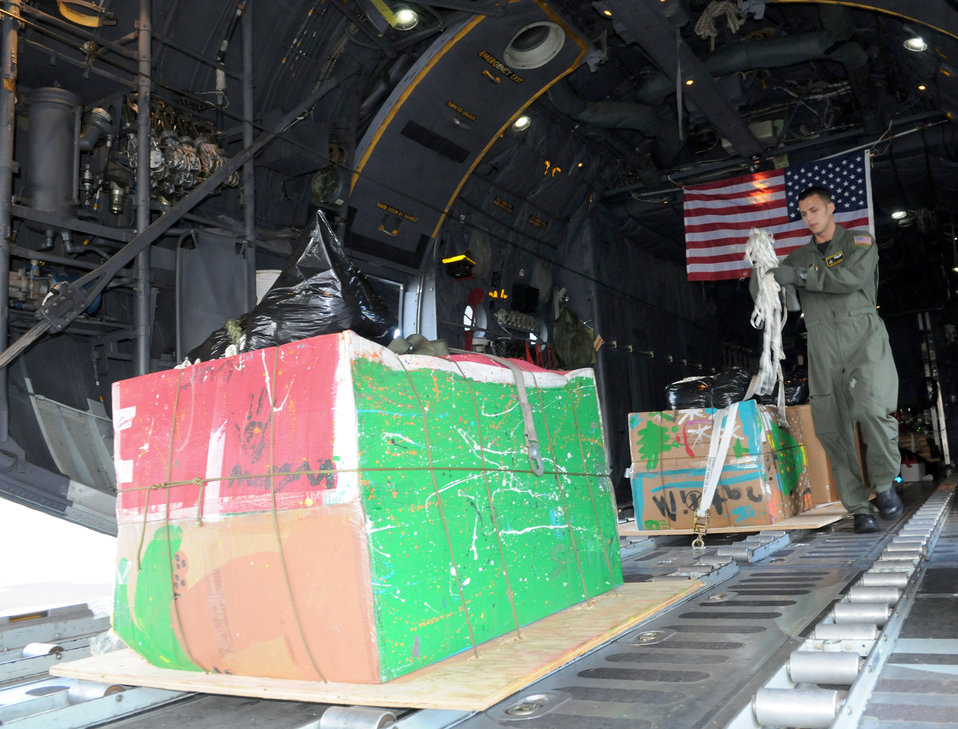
Operation Christmas Drop

Staff Sgt. Keo Khamone prepares a box of humanitarian goods for take-off during Operation Christmas Drop Dec. 14, 2010, at Andersen Air Force Base, Guam. Airmen from the 36th Wing at Andersen AFB and the 36th Airlift Squadron at Yokota Air Base, Japan, come together each year as a part of a training exercise to drop thousands of pounds of donated supplies over the Micronesian Islands. This year more than 20,000 pounds of supplies, worth more than $93,000 will be dropped throughout the week. Sergeant Khamone is a loadmaster assigned to the 36th Airlift Squadron.